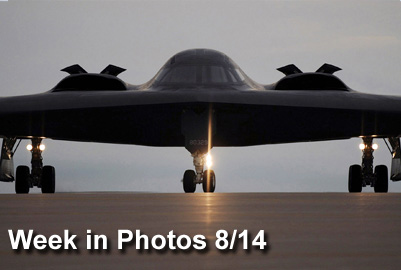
Week in Photos

Air Force Week in Photos for Aug. 14 highlights photos from around the Air Force. In this photo by Senior Airman Jason Huddleston, the B-2